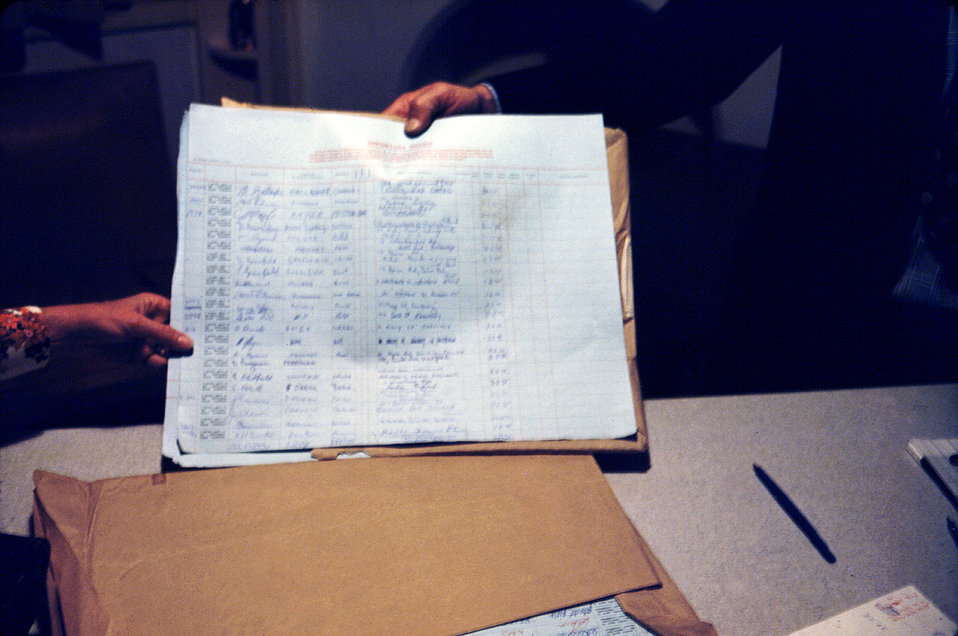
This photograph of the Salisbury, Rhodesia, (now Harare, Zimbabwe), Salisbury Youth Hostel registry contained the names of the two travelers that were later hospitalized with Marburg fever in 1975.